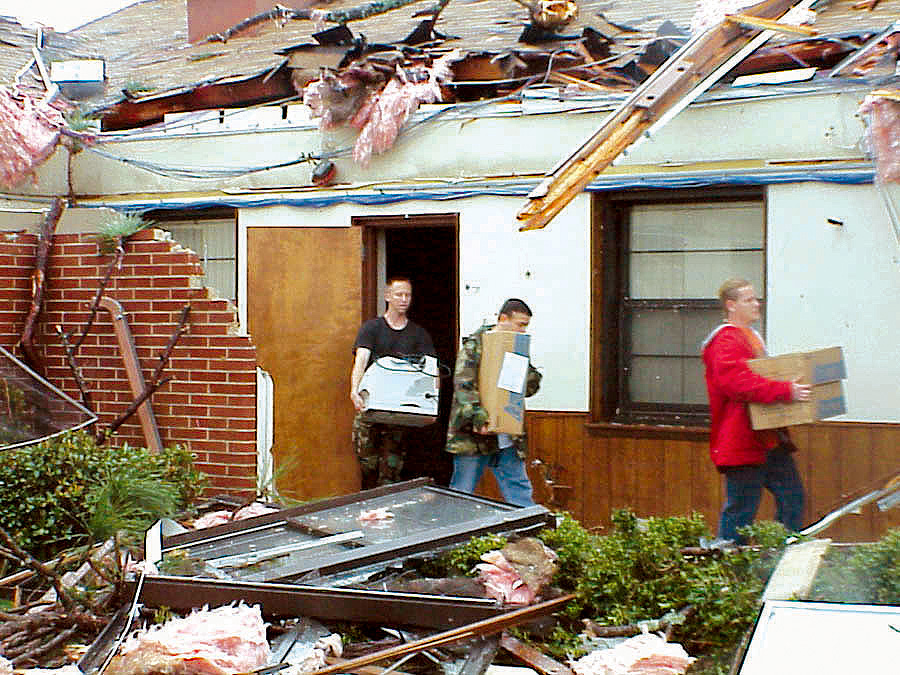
Tornado strikes Tyndall

TYNDALL AIR FORCE BASE, Fla. -- People here began recovery efforts after a tornado touched down at about 4 a.m. Feb. 16, 2003. The tornado caused an estimated $250,000 worth of damage to 10 facilities and more than 30 vehicles in the area. No one was injured and base operations were uninterrupted.